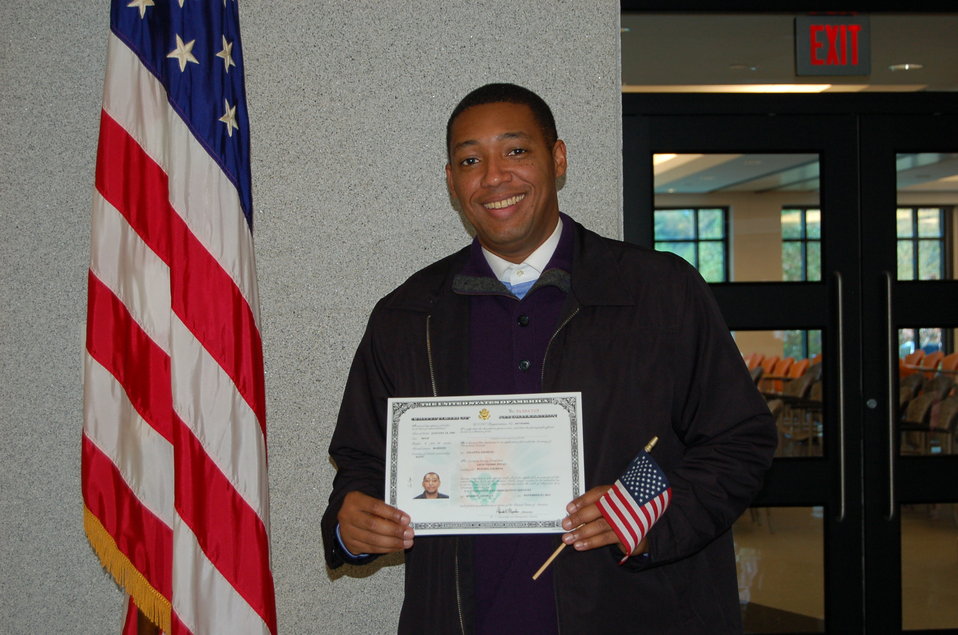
New Citizens